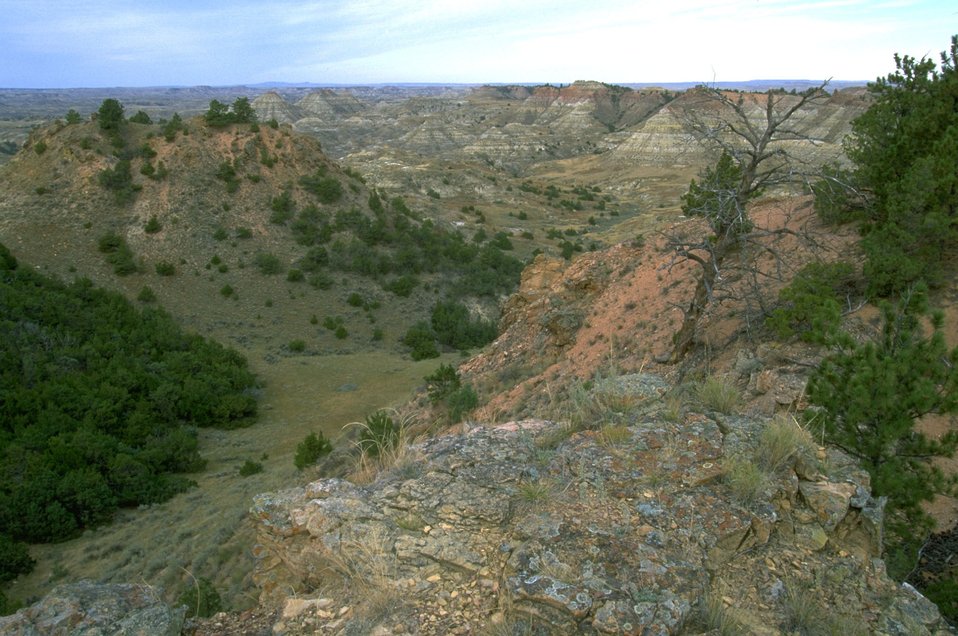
Terry Badlands Wilderness Study Area